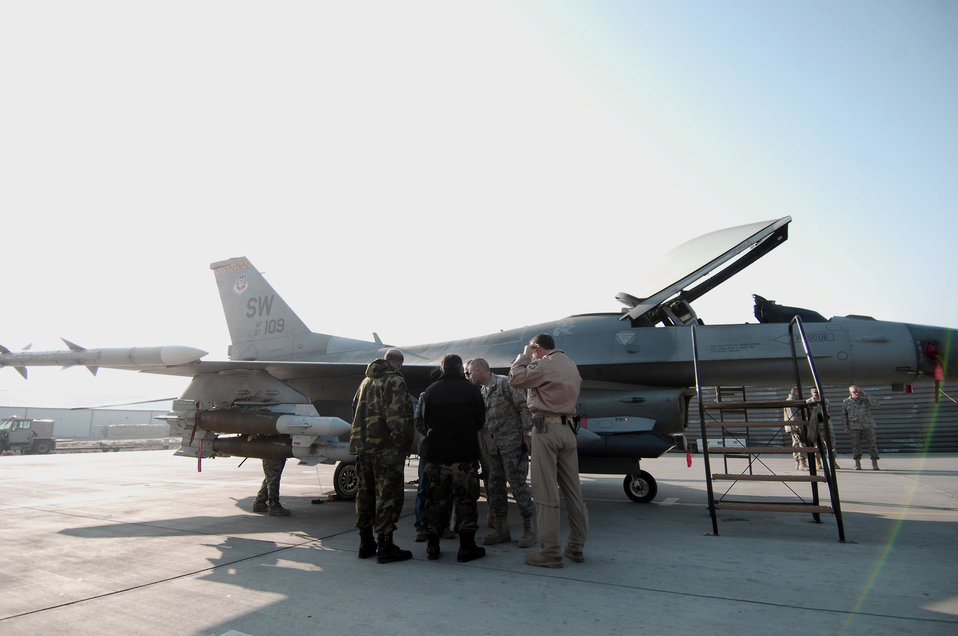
Partnership between air forces in the making

Brig. Gen. Steven L. Kwast, the 455th Air Expeditionary Wing commander, explains how a seeker-head on the front of laser-guided bomb directs the bomb to its target to Brig. Gen. Abdul Wahab Wardak, the Afghan National Army Air Corps chief of staff Dec. 19, 2009, at Bagram Airfield, Aghanistan. General Wardak and a delegation of Afghan National Army Air Corps officials visited with the 455th Air Expeditionary Wing to discuss close-air support-operations, air traffic control, maintenance, weapons loading procedures and cargo processing procedures.